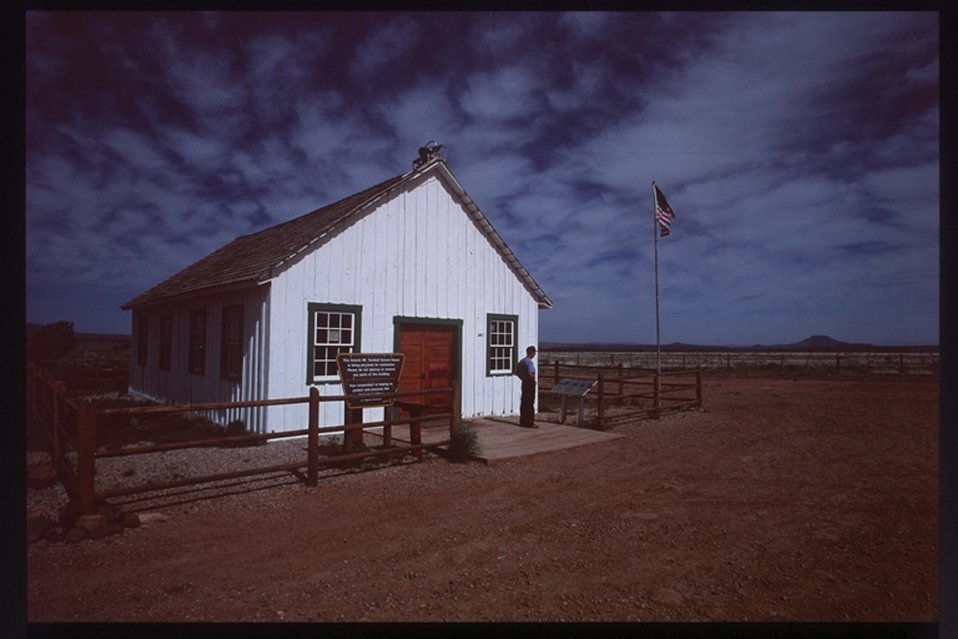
Mt. Trumball Schoolhouse.